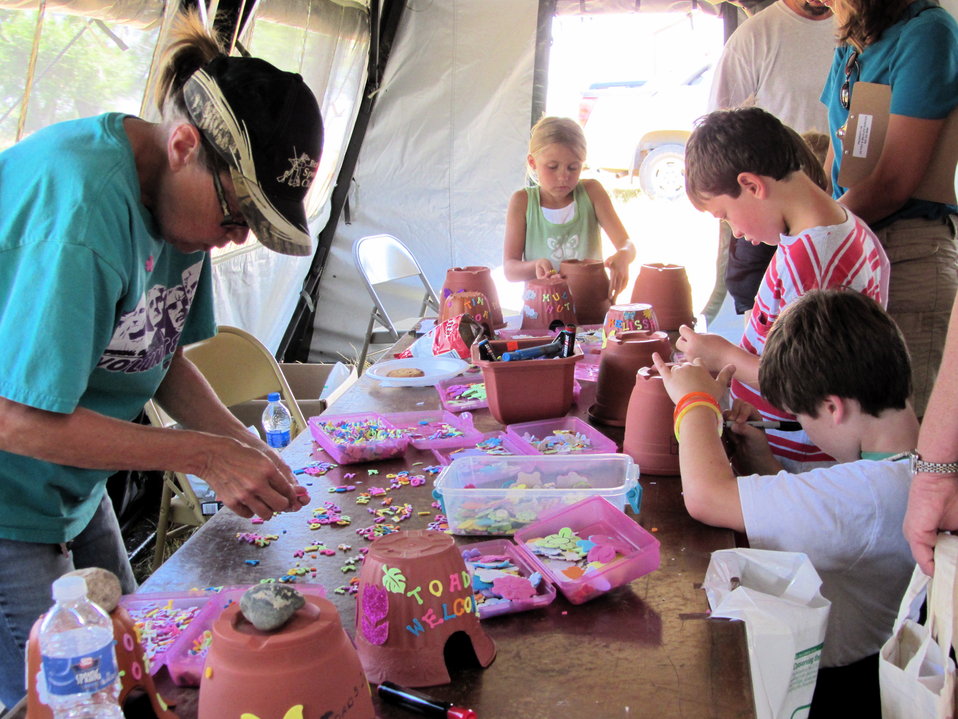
2011 Huron Prairie Fest